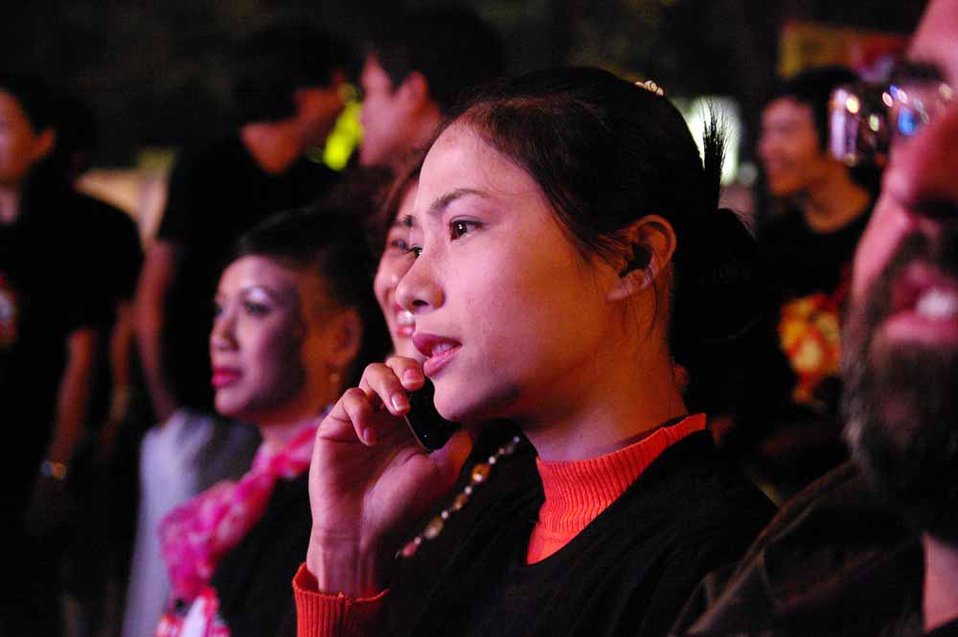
dance4life, Hanoi